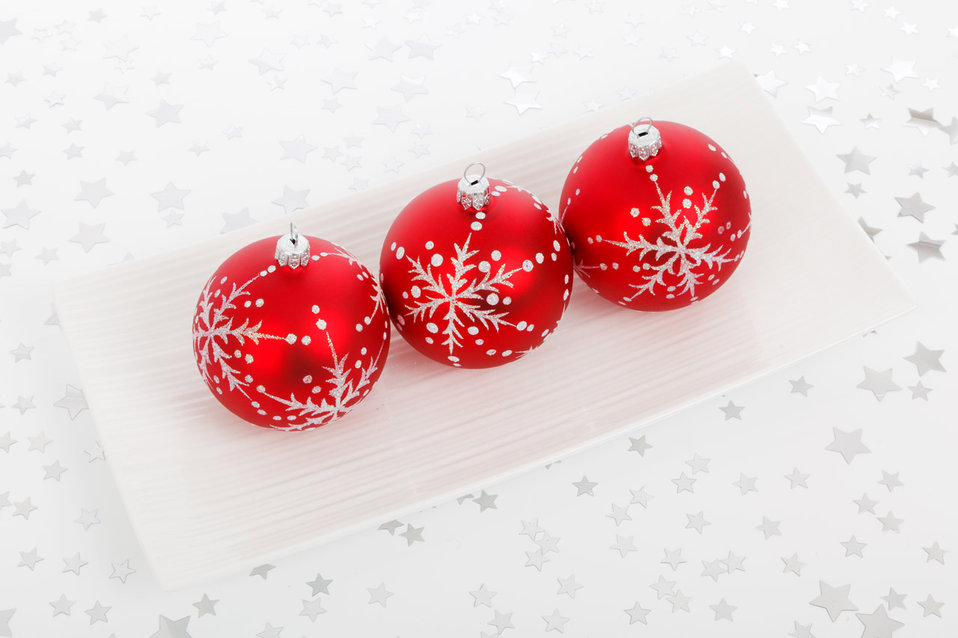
Three bauble decorations

Three red baubles on the plate with stars on the background.